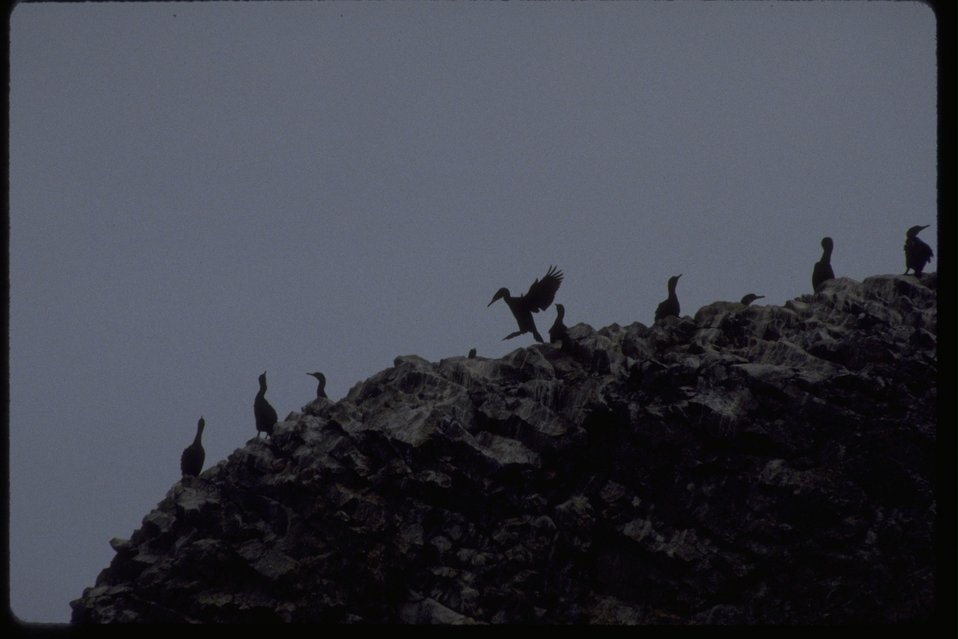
Cormorants on Colony Rock, one is landing. Near Yaquina Head.